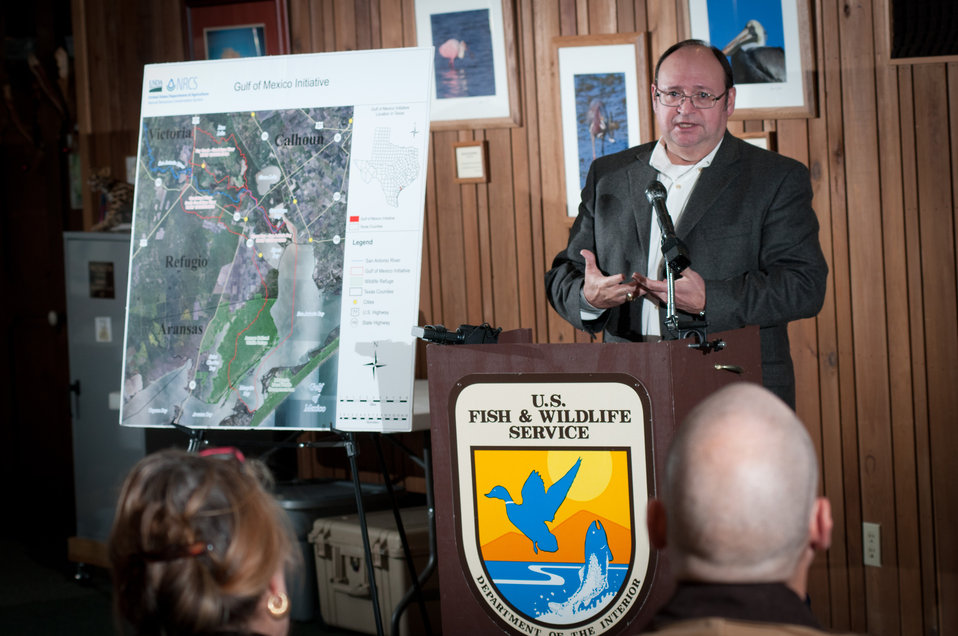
U.S. Department of Agriculture (USDA) Natural Resources Conservation Service (NRCS) State Conservationist Salvador Salinas with Federal and state partners, including representatives from U.S. Fish and Wildlife Service and local soil and water conservation districts (SWCDs) held a press conference at the Aransas National Wildlife Refuge, in Austwell, TX, on Friday, Dec. 16, 2011. Salinas covered the recent announcement of the USDA-NRCS Gulf of Mexico Initiative (GoMI) efforts to improve water quality, habitat, and the health of the Gulf ecosystem. “Launching this initiative is a top priority for NRCS in Texas because the Gulf of Mexico is one of our state’s premier natural resources. It provides vital habitat for wildlife, and creates jobs in industries that depend upon them. The health of this resource is essential to Texas as well as to the nation,” said Salinas.
The Texas initiative focuses on three watersheds in Refugio, Calhoun, Victoria and Aransas counties and ultimately the Gulf of Mexico. “What is really compelling about GoMI and other similar conservation efforts is that they prove that Texas farmers and ranchers not only feed and clothe us and power our vehicles, but they can also help protect and restore our rivers and provide more habitat for wildlife,” stated Salinas. “That’s why it is important that this conservation project is not about taking productive farm land out of production. This is a working lands initiative, so that not only are we helping to restore the health of the Gulf, but we’re also helping to sustain and enhance the productivity of the Gulf’s farms and ranches.”